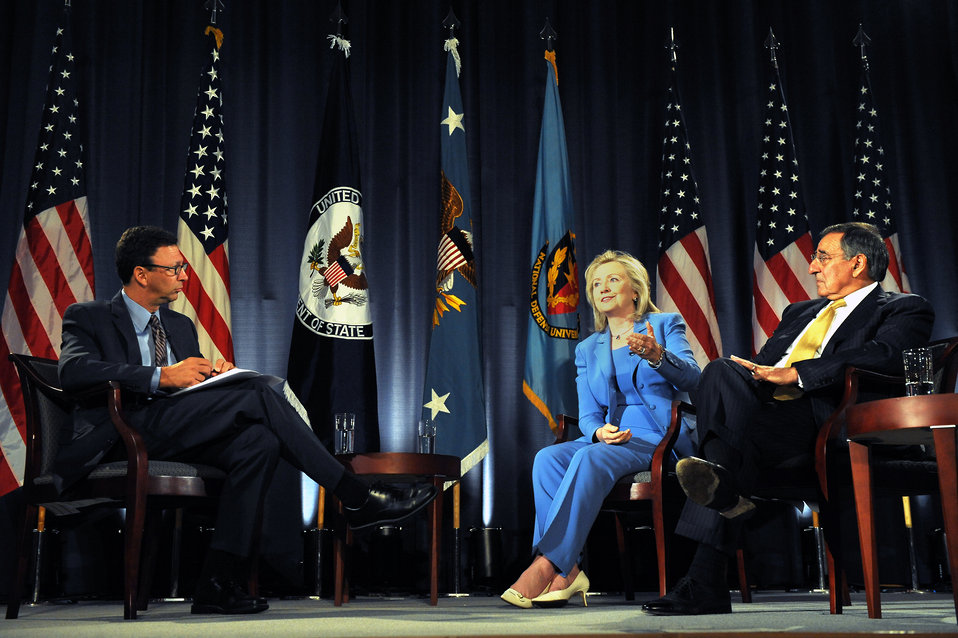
National Defense University Hosts a Conversation With Secretaries Clinton and Panetta

The National Defense University hosts a conversation with U.S. Secretary of State Hillary Rodham Clinton, center right, and U.S. Secretary of Defense Leon Panetta, right, moderated by Frank Sesno, Director of the School of Media and Public Affairs at George Washington University, left, at NDU in Washington, D.C., on August 16, 2011.